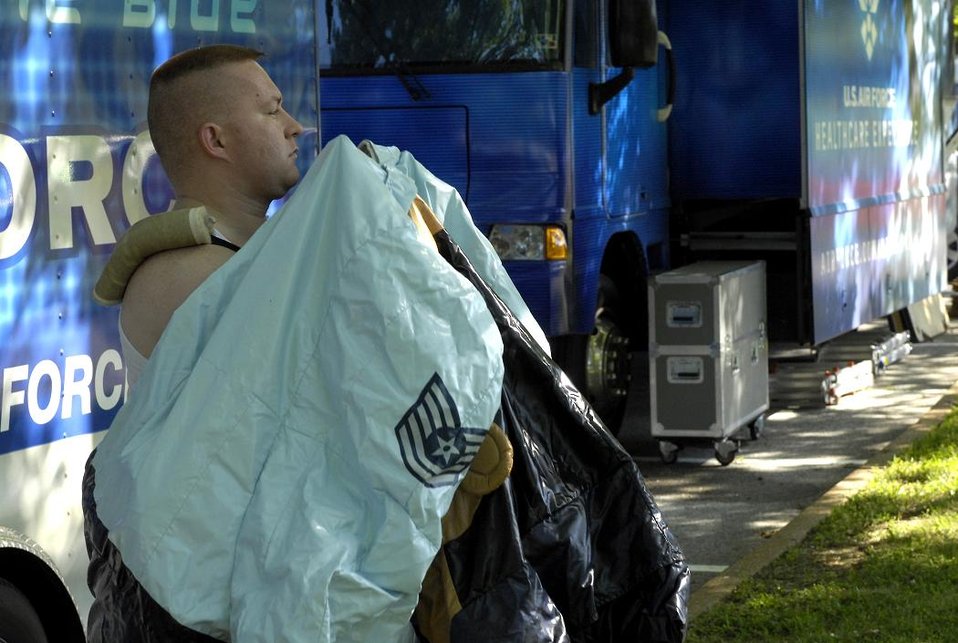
Air Force Week St. Louis

Staff Sgt. Mike Brown puts on the Ricky Recruiter suit which will inflate into a giant Air Force Tech Sergeant. Sgt. Brown dawned the suit during the Jefferson Barracks Blast, July 3, 2007. St. Louis County, in partnership with the Air Force during Air Force Week, put on the blast, entertaining the more than 20,000 in attendance. Sgt. Brown is a recruiter with the 345th Recruiting Squadron, Scott Air Force Base, IL.